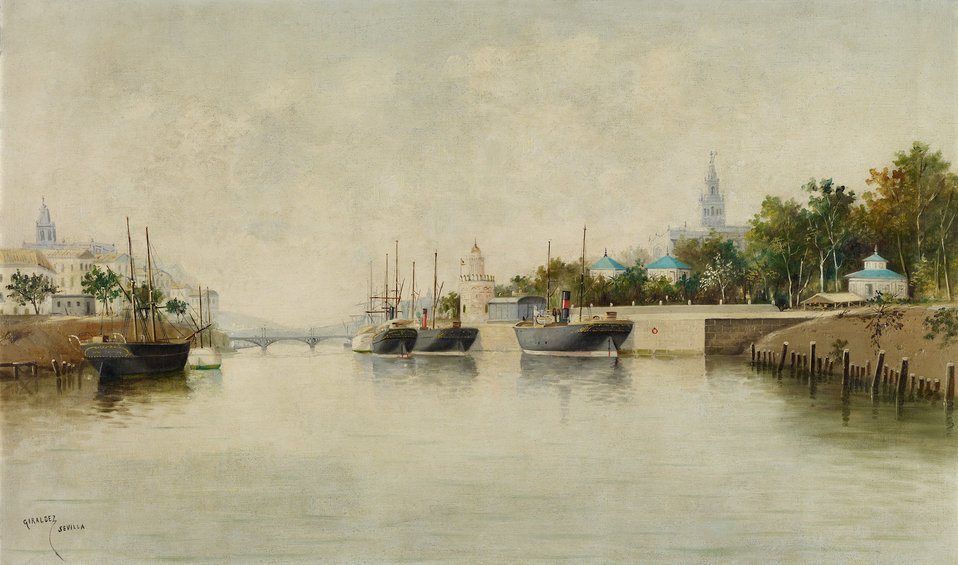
Puerto de Sevilla, oil on canvas, 60 x 100 cm, Inv. CTB.1995.149 Museo Carmen Thyssen Native name Museo Carmen Thyssen Location Málaga, Spain Coordinates 36° 43′ 17″ N, 4° 25′ 22″ W Established 2011 Website www.carmenthyssenmalaga.org